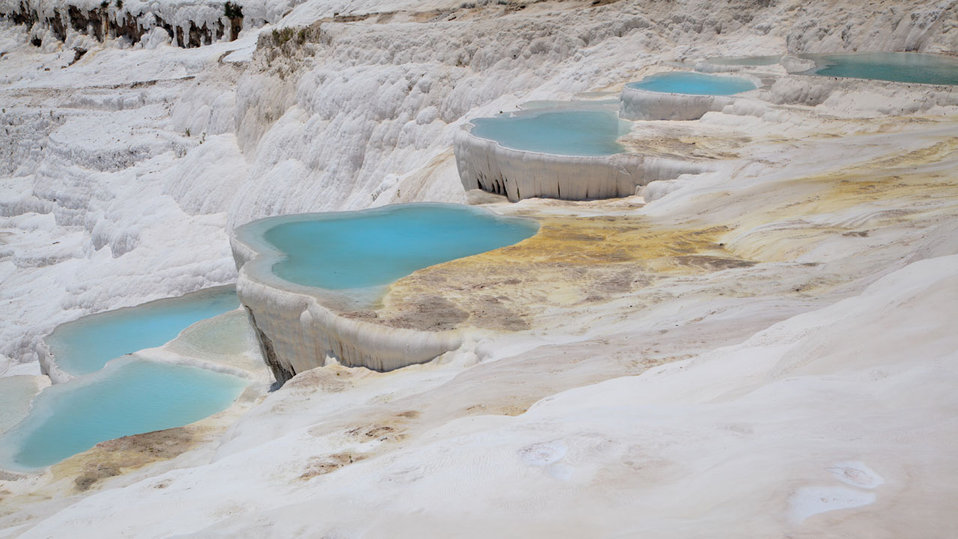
Pamukkale pools in turkey.